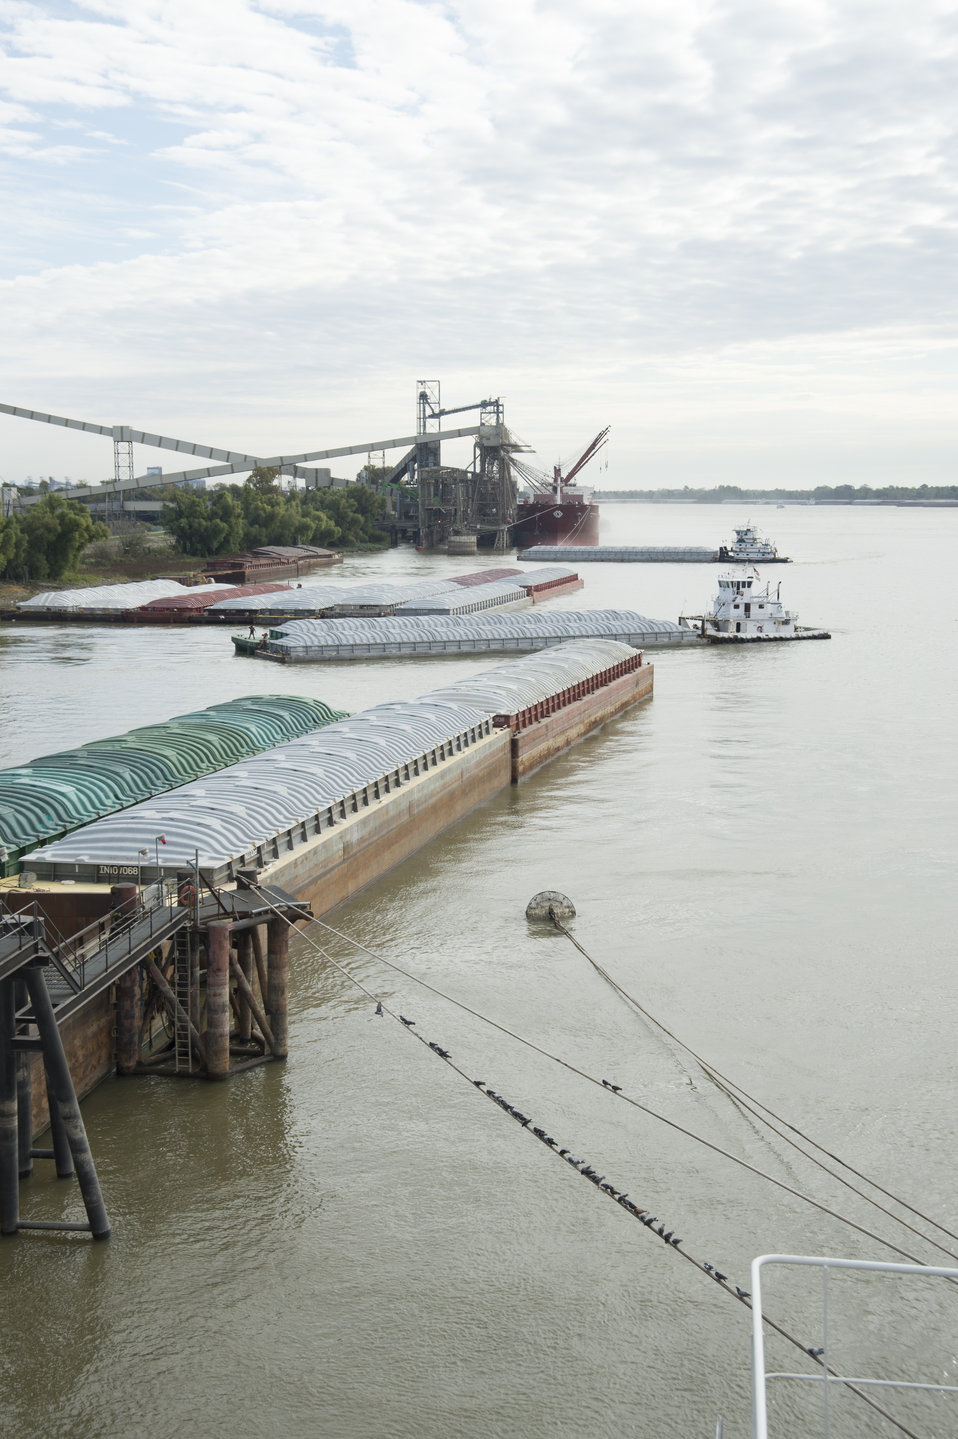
Barges are lined up waiting to transfer grain to storage facilities near the Port of New Orleans in New Orleans, LA on Tuesday, Nov. 19, 2013.